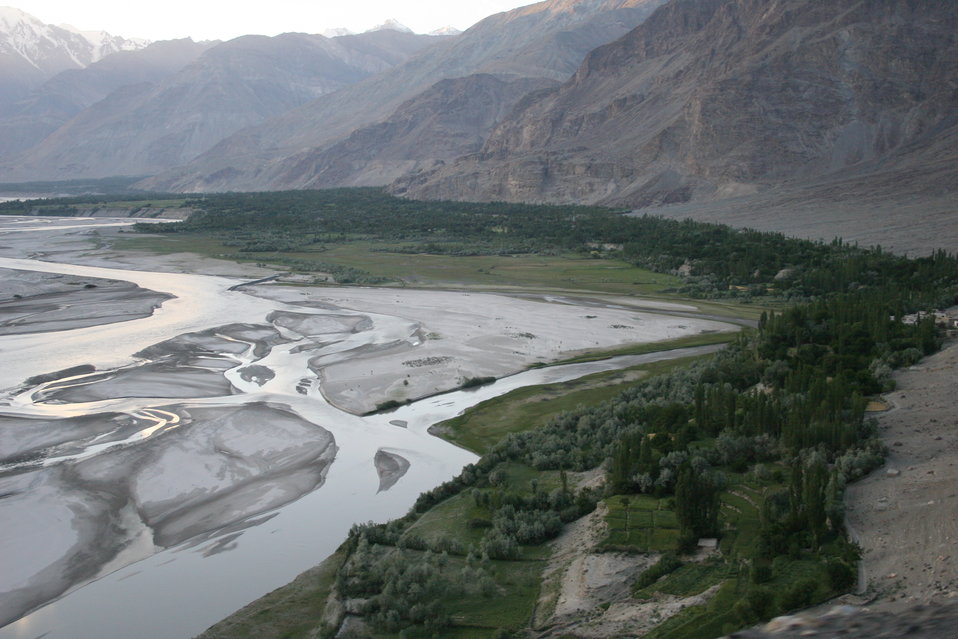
Canals